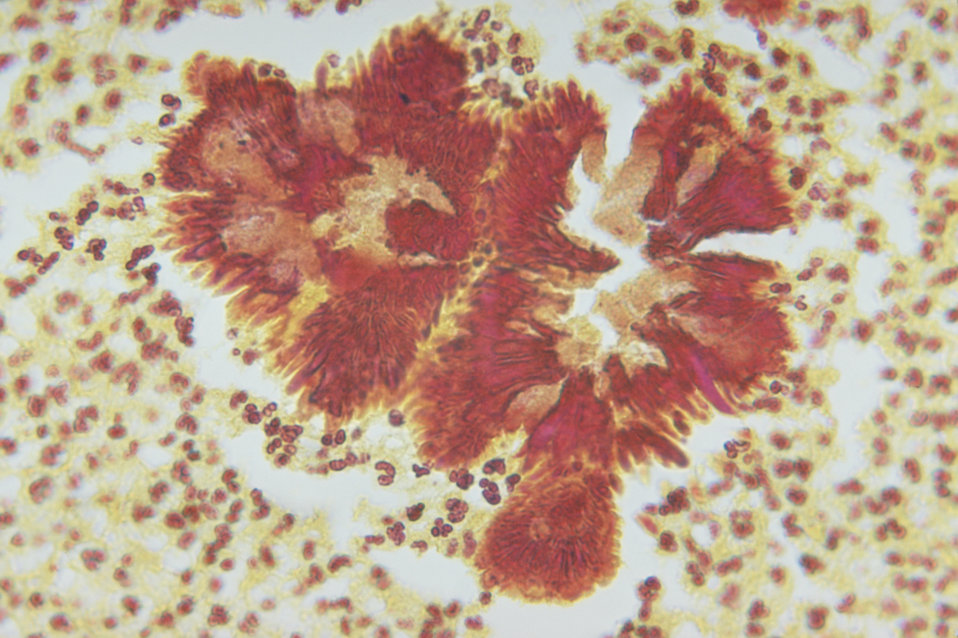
Note the histopathologic changes in a case of botryomycosis due to Pseudomonas aeruginosa using a Brown-Brenn stain.